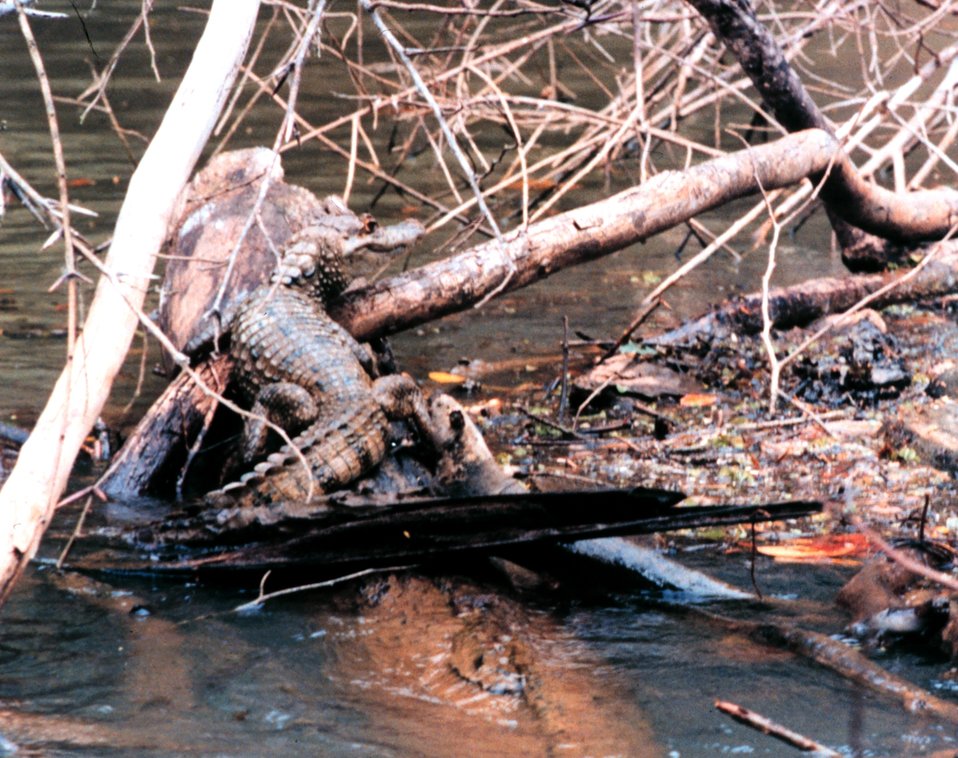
Cayman - Caiman crocodilus - along a river bank.